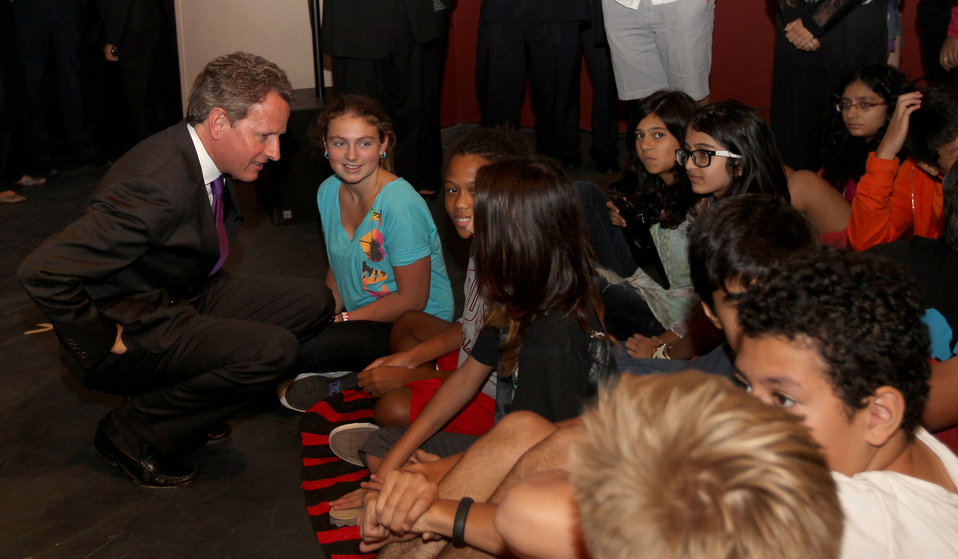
Secretary Geithner visits former elementary school

Secretary Timothy Geithner interacts with students while visiting his former elementary school, the American Embassy School in New Delhi on Tuesday.